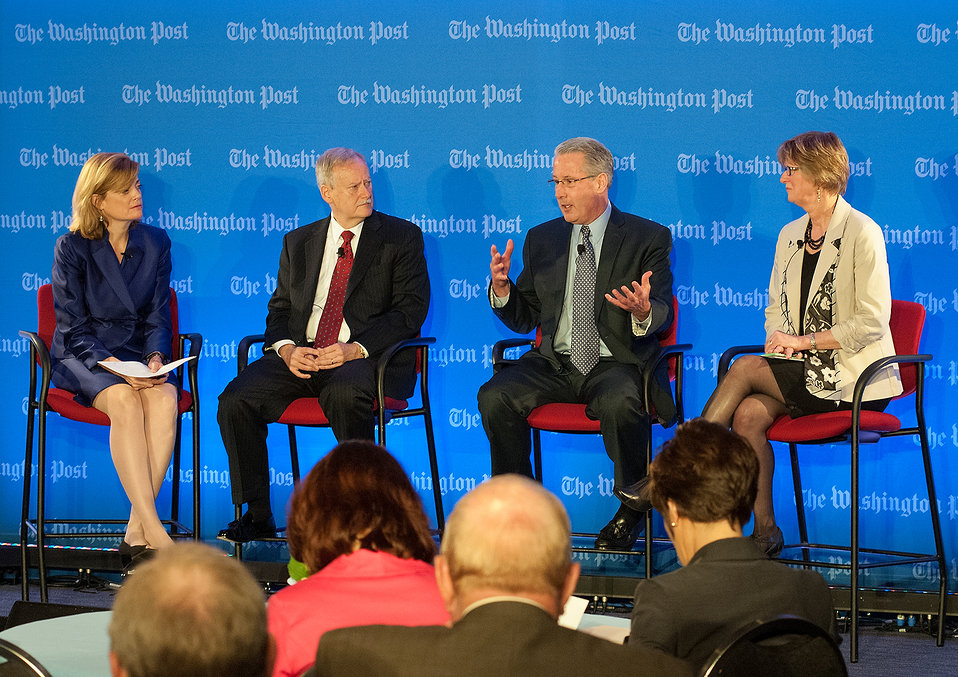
(L to R) Washington Post Live Editor Mary Jordan, United Fresh Produce Association President and Chief Executive Officer (CEO) Tom Stenzel, Dairy Farmers of America President and Chief Executive Officer (CEO) Rick Smith, and National Corn Growers Association President Pam Johnson chaired the panel, From the Farm: Innovations and the Latest Advances in Food Production, during the annual live forum, “Future of Food: Building a Sustainable Food System 2013,” sponsored by the Washington Post Live in Washington, D.C. on Wednesday, May 22, 2013. Agriculture Secretary Tom Vilsack, leading agricultural, government and nutrition experts discussed expanding healthy, sustainable food systems including public-private partnerships, the market’s role in nutrition and the future of agricultural innovation.